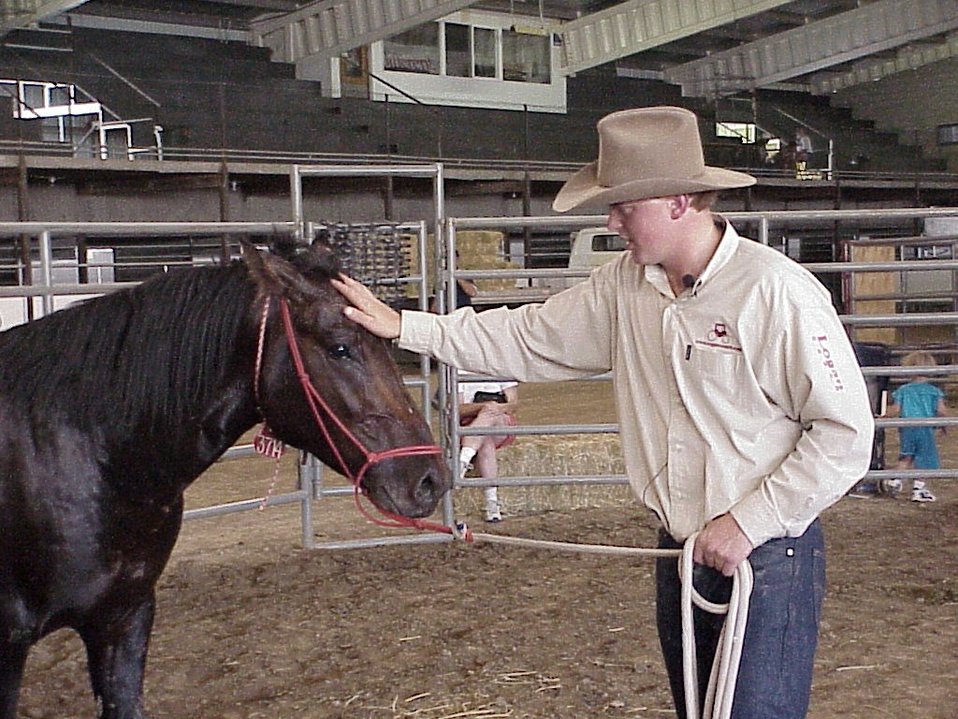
Horse Gentler Mario Johnson Lewiston Wild Horse and Burro Adoption Program Auction WHB indoor auction Cottonwood Field Office UCSC Upper Columbia Salmon Clearwater District